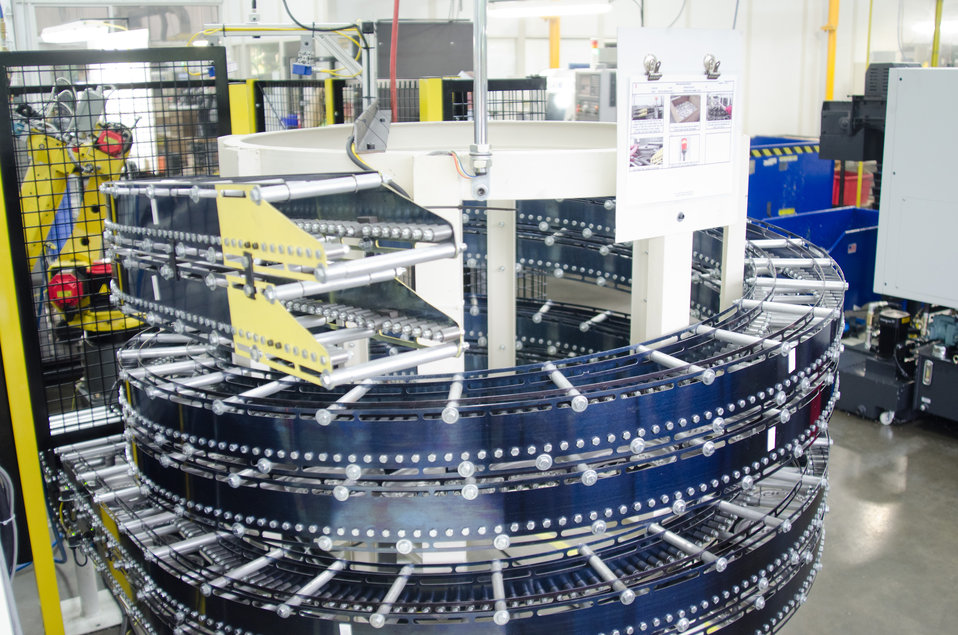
Automated precision robotic machining facility at Port City Group’s Port City Castings Corporation manufactures high-pressure aluminum die-castings, mostly for the automotive industry, in Muskegon, MI, facility on Wednesday July 20, 2011. Port City Group boosted its employment by 12 percent over last year thanks to two Rural Business Guaranteed Loans totaling $9.6 million. In its 80,000 sq. ft. facility, machines that range from 800 – 1,600 tons, and cast A380 aluminum alloy products from melted ingots of aluminum, into automotive components of U.S.A. made vehicles. The process features a variety of robotic presses; computer controlled machining; quality control facility; and complete measurement and testing laboratory. In 2009 banks were backing out of loans for PCG equipment purchase agreements. The U.S. Department of Agriculture (USDA) loan guarantee helped make the loan possible with its guarantee. PCG obtained the needed robotic and other equipment. This resulted in a stable workforce that has since grown. When asked about their USDA experience, Port City Group Sales Manager Laura LaGuire said, “It was great! They were very helpful. Everything that came up was handled smoothly, the money came in place when it was needed, and it was a very smooth transition.”